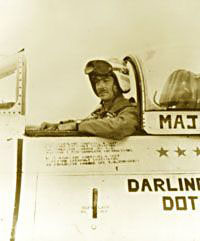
51st Fighter Wing Aces

U.S. Marine Corps Maj. John Bolt became the 14th ace of the wing July 11, 1953. He was assigned to the 39th Fighter-Interceptor Squadron during the Korean War. Major Bolt is the only USMC ace of the war.